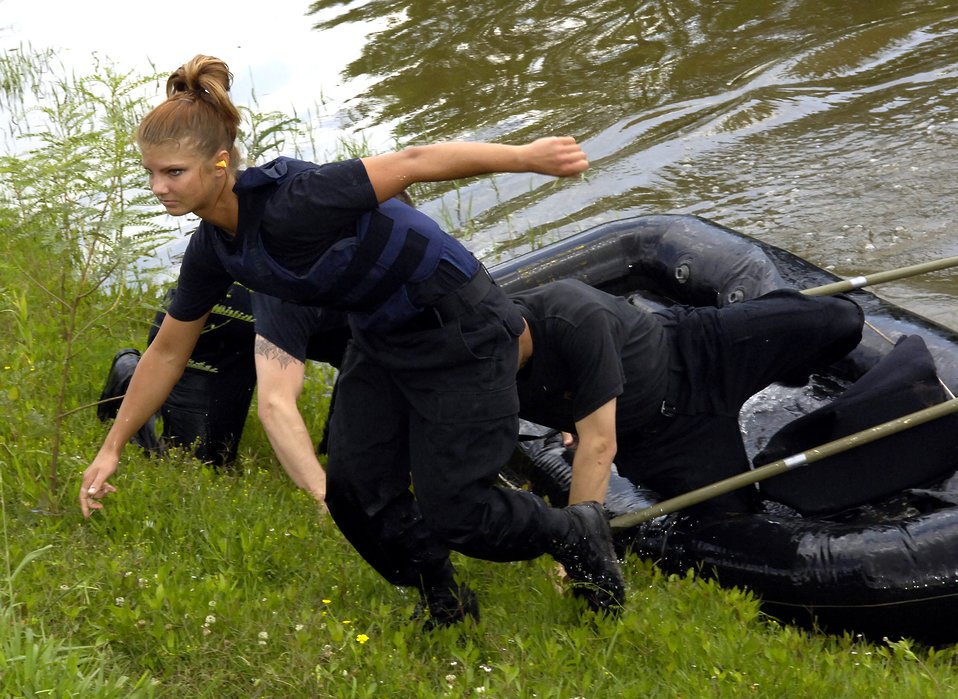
Security forces Airmen at SWAT competition

Airman 1st Class Gina Manning jumps out of a raft after racing across a pond during a timed event at the Louisiana State SWAT Team Competition in Alexandria, La., on Tuesday, May 2, 2006. Airman Manning is with the 2nd Security Force Squadron at Barksdale Air Force Base, La.